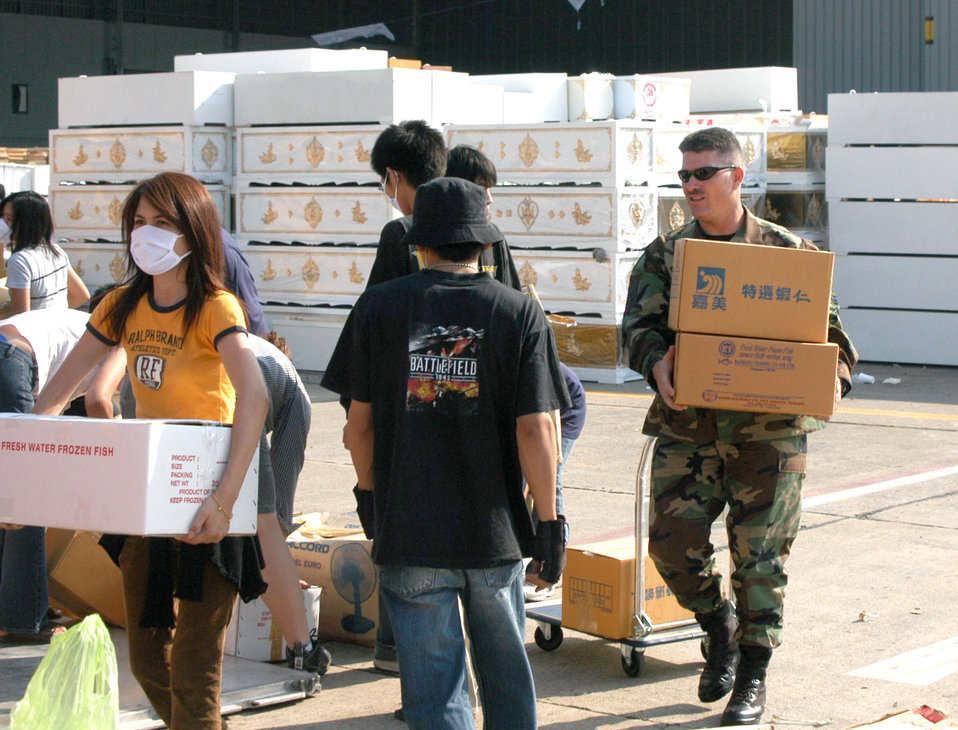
Airmen continue to deliver relief in Thailand

BANGKOK, Thailand -- An Airman here carries boxes of relief supplies Jan. 1 at the international airport. He and 100 others from the 353rd Special Operations Group are flying supplies to the tsunami-hit areas of southern Thailand. In the background are hundreds of caskets. The 353rd SOG Airmen are assigned to Kadena Air Base, Japan.